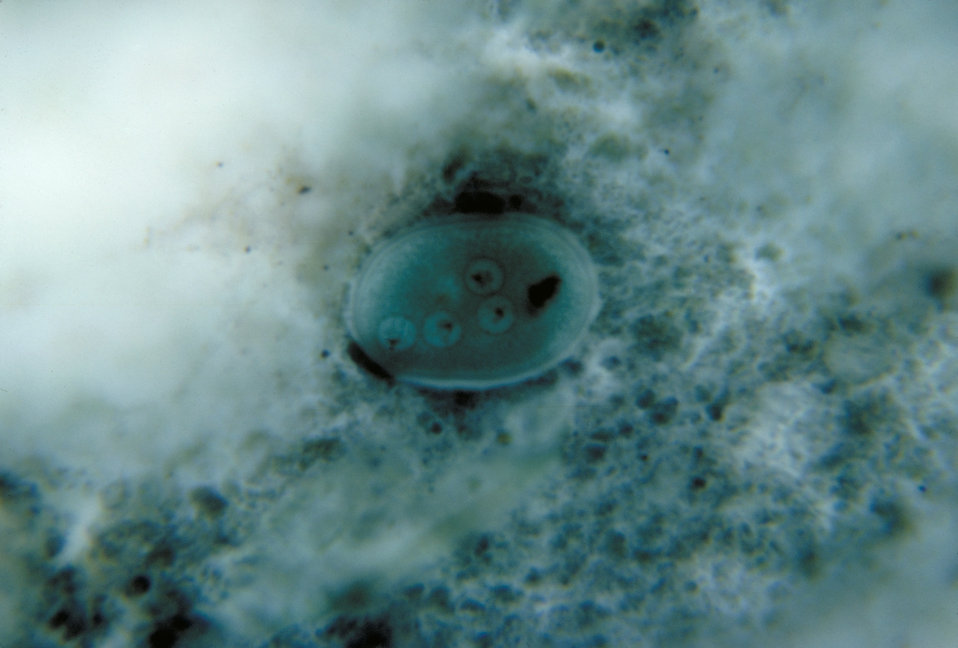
Entamoeba coli cyst. Chlorazol black stain. Parasite, ameba.